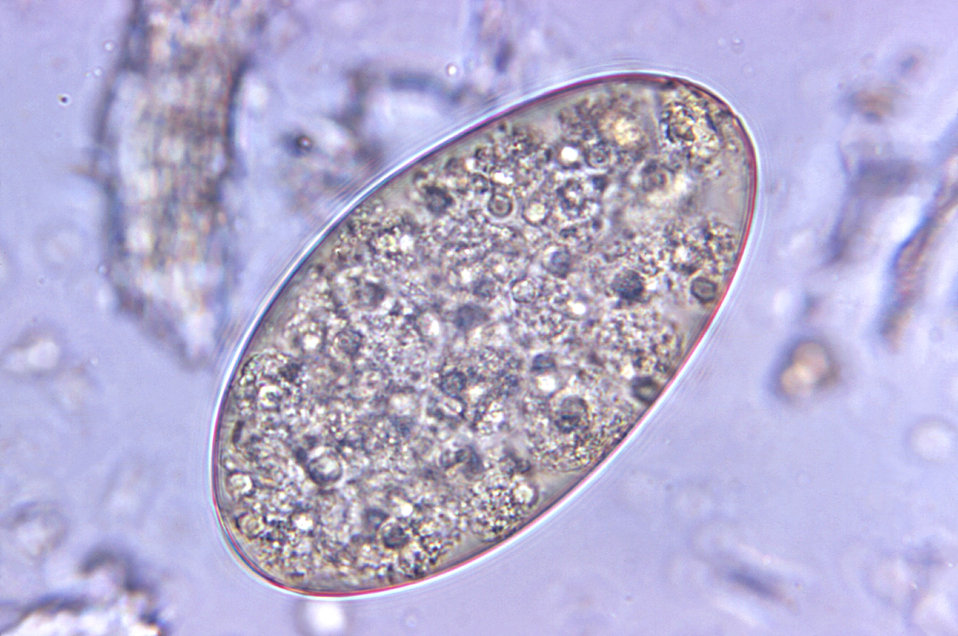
Magnified 500X, this photomicrograph revealed the presence of a Fasciolopsis buski trematode egg that was found in an unstained formalin-preserved stool sample. F. buski are the largest intestinal flukes found parasitizing human beings. These flukes inhabit Asia and the Indian subcontinent, especially in areas where humans raise pigs, and consume freshwater plants.Clinical Features: